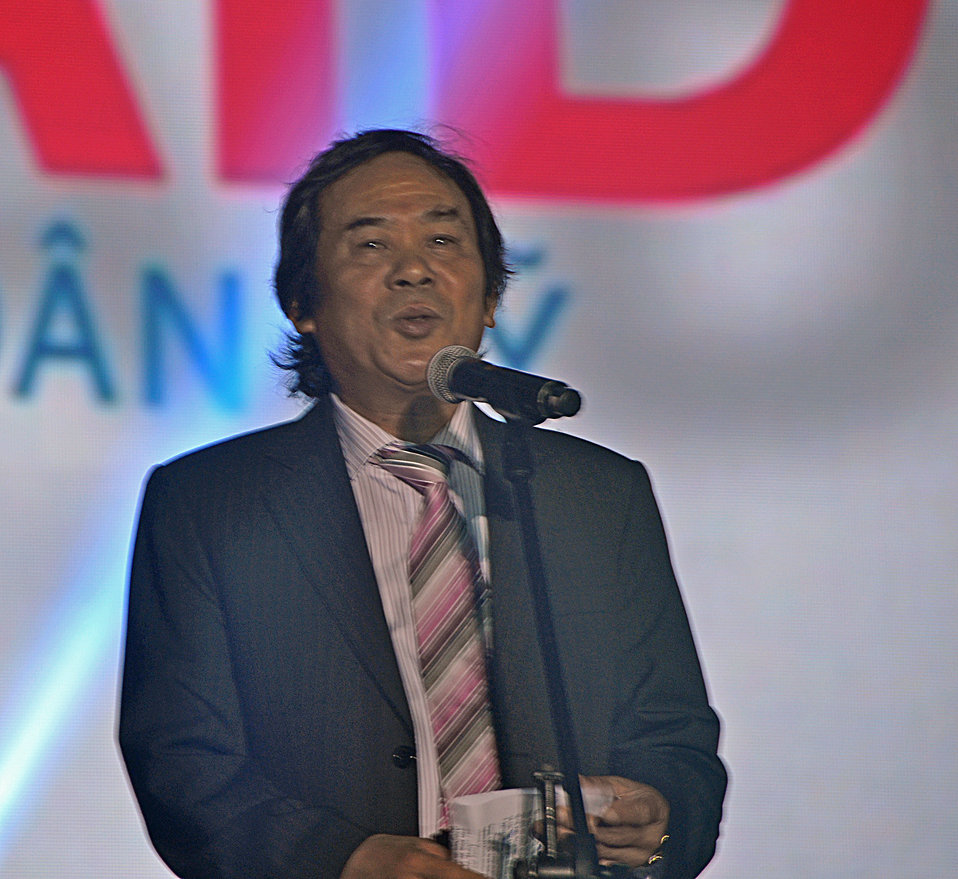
Dr. Nguyen Van Tinh, Director General, of the International Cooperation Department of the Ministry of Culture, Sports and Tourism, speaks at the MTV EXIT concert against human trafficking and exploitation

USAID supports MTV EXIT concert against human trafficking and exploitation